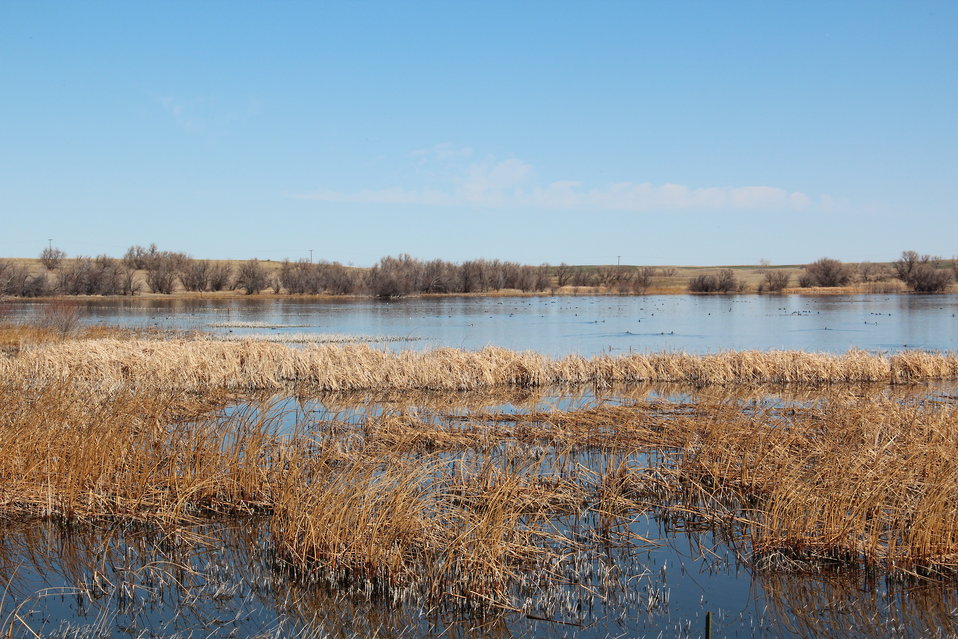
Pearce WPA - Bowdoin NWR

Pearce Waterfowl Production Area in the Bowdoin NWR Complex